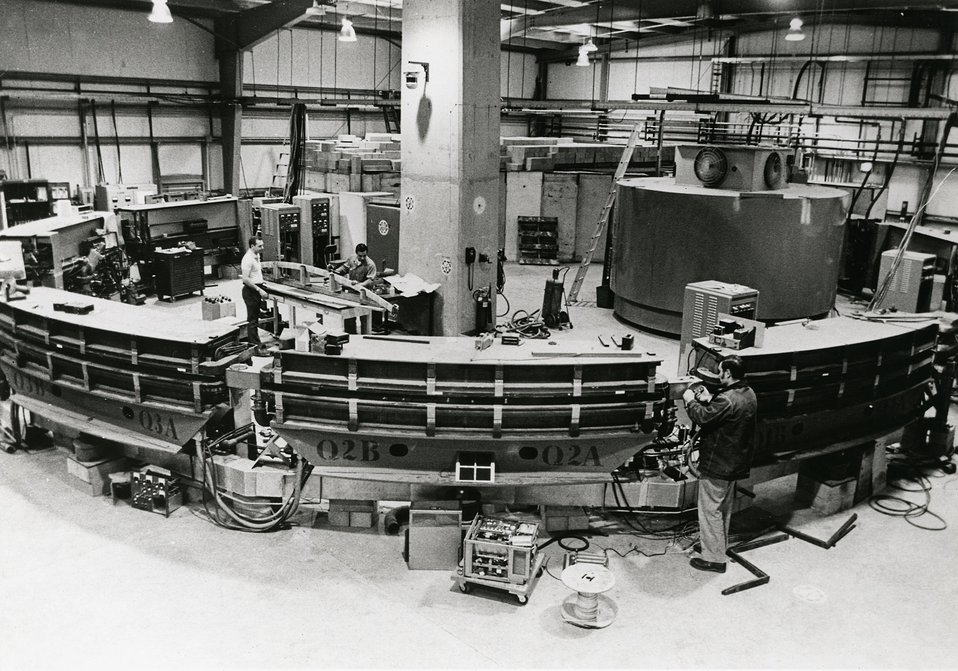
View of the booster to be installed at the ZGS at the AEC Argonne Lab. c.1972